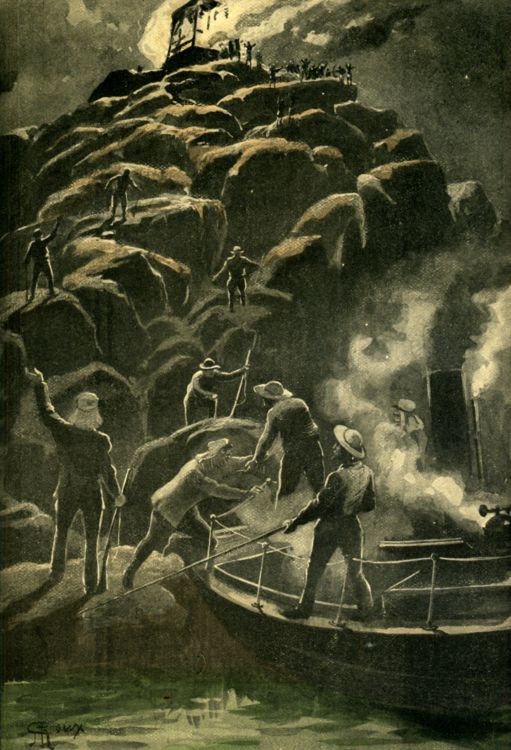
An illustration from Jules Verne's novel 'The Adventures of Three Englishmen and Three Russians in South Africa' (1870) drawn by Jules Férat. Polski: Ilustracja powieści Juliusza Verne'a 'Przygody trzech Rosjan i trzech Anglików w południowej Afryce' (1870) autorstwa Julesa Férata. Français : Jules Verne: 'Aventures de trois russes et de trois anglais dans l’Afrique australe' (1870), dessins par Jules Férat. Orginal description: Français : Ils atteignirent la chaloupe, le donjon tout en feu brillait comme un phare.